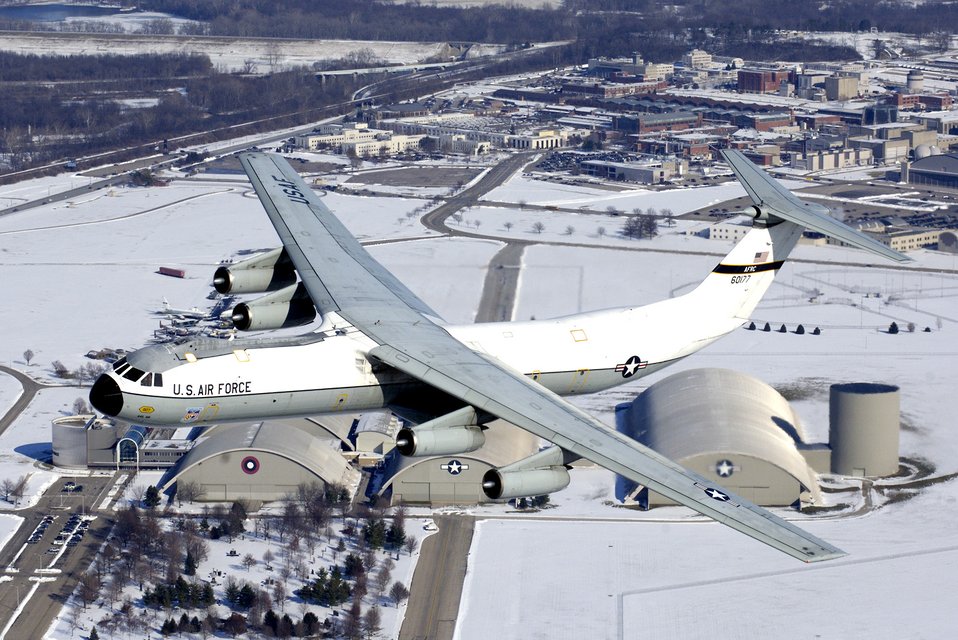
Former POWs relive freedom flights

This C-141 Starlifter aircraft, known as the